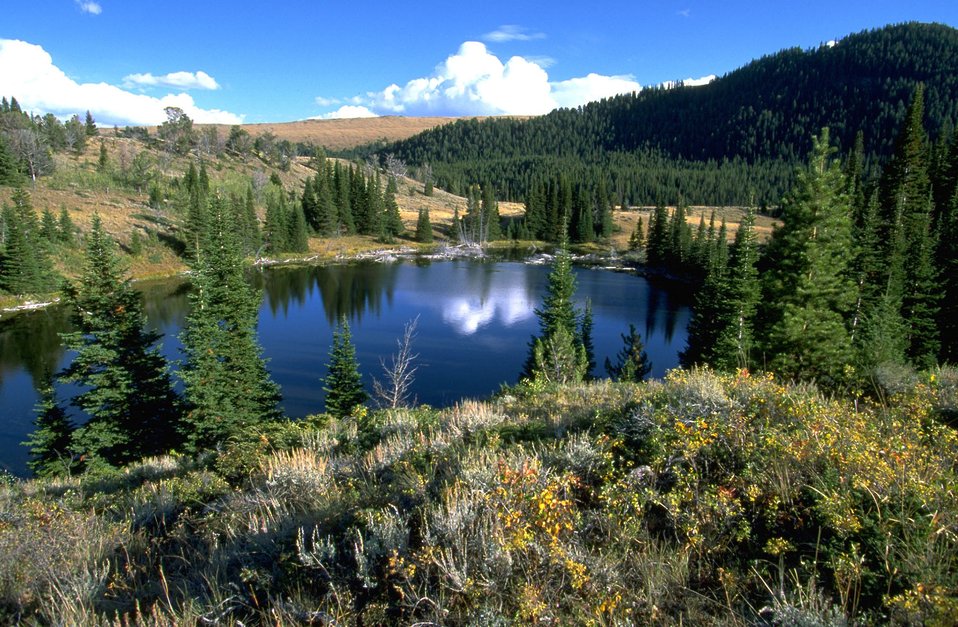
Scenic view of Reservoir Lake in the Axolotl Lakes Wilderness Study Area